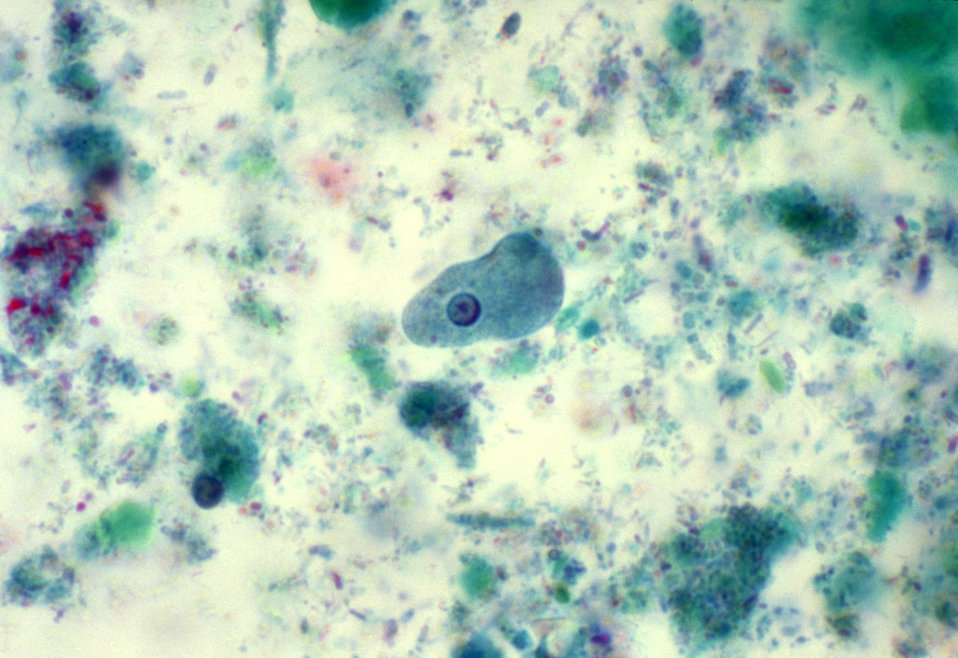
Entamoeba histolytica trophozoite showing atypical nucleus with its uneven peripheral chromatin.